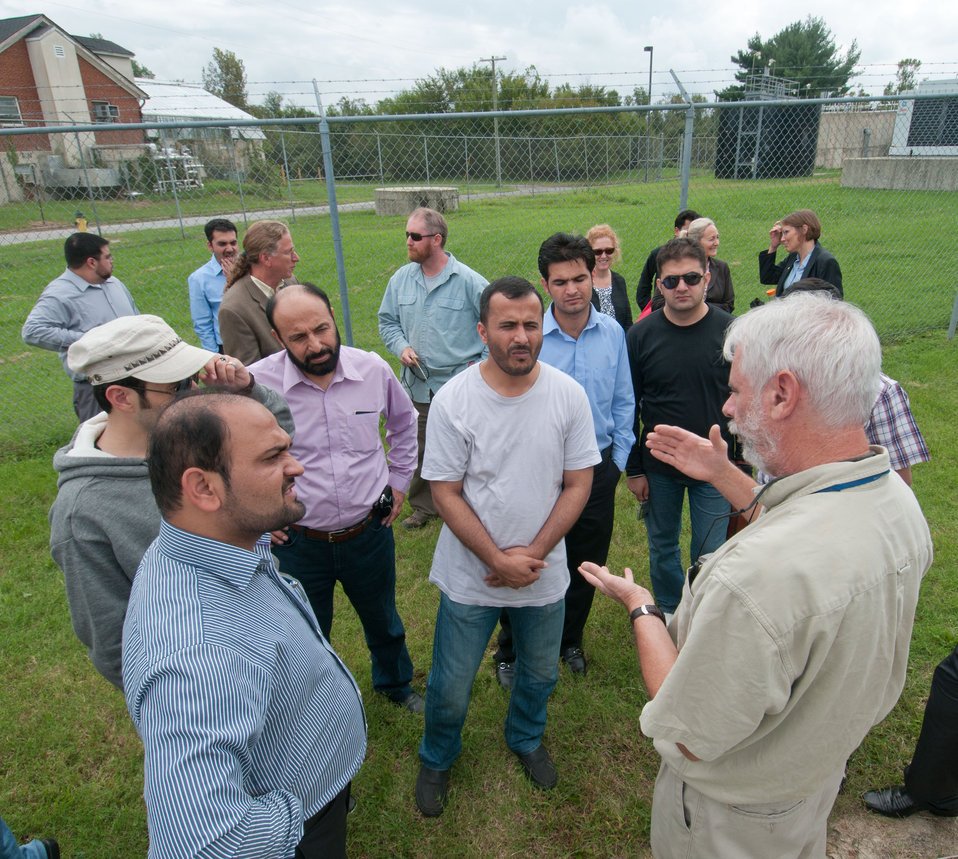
U. S. Department of Agriculture (USDA), Agriculture Research Service's Dennis Timlin (khaki shirt and pants) spoke with the Afghan Ministry of Agriculture's Borlaug Fellows about the Crop Systems, Global Climate Change Lab- SPAR Chambers at the Agricultural Research Service facility, in Beltsville, MD, on Tuesday, Sept. 21, 2011.